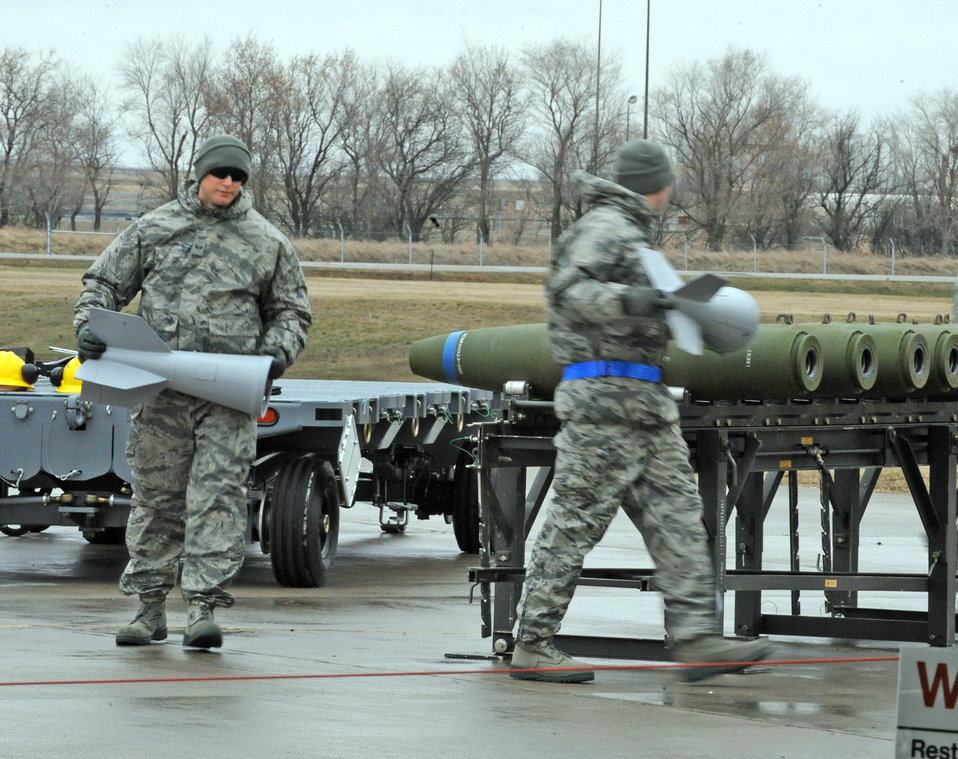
Global Strike Challenge load competition kicks off at Minot

Load crew members attach the fins to conventional bombs in a load crew competition April 13, 2010, at Minot Air Force Base, N.D.